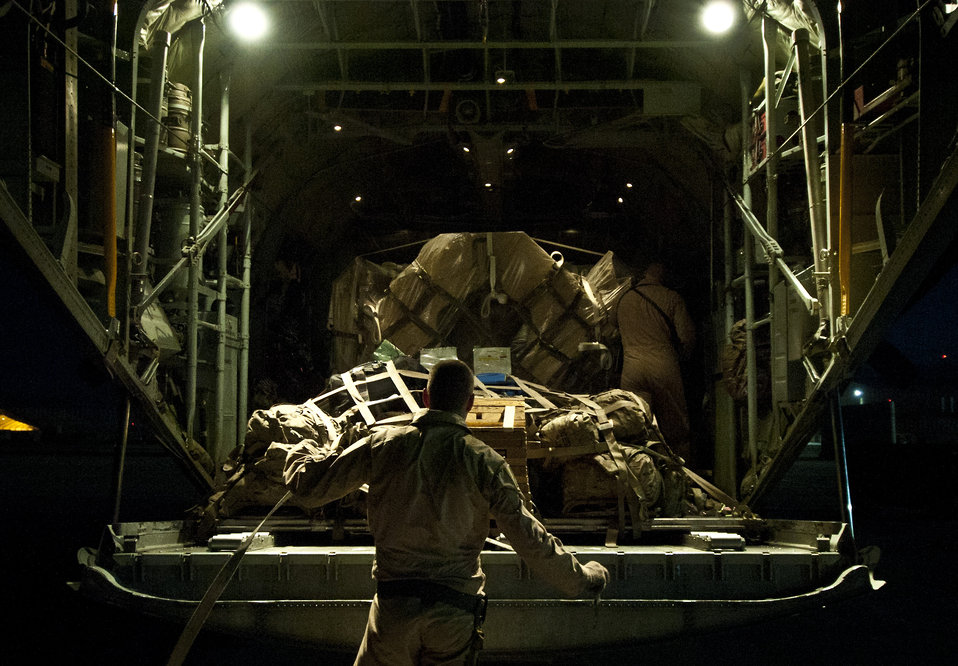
Hercules: A day in the life

Airman 1st Class Tristian Lyons secures a pallet of cargo aboard a C-130H Hercules at Bagram Airfield, Afghanistan, June 2, 2012. Bagram Airfield provides dedicated tactical airlift support to ground forces operating in Afghanistan. Lyons is a loadmaster deployed to the 774th Expeditionary Airlift Squadron.